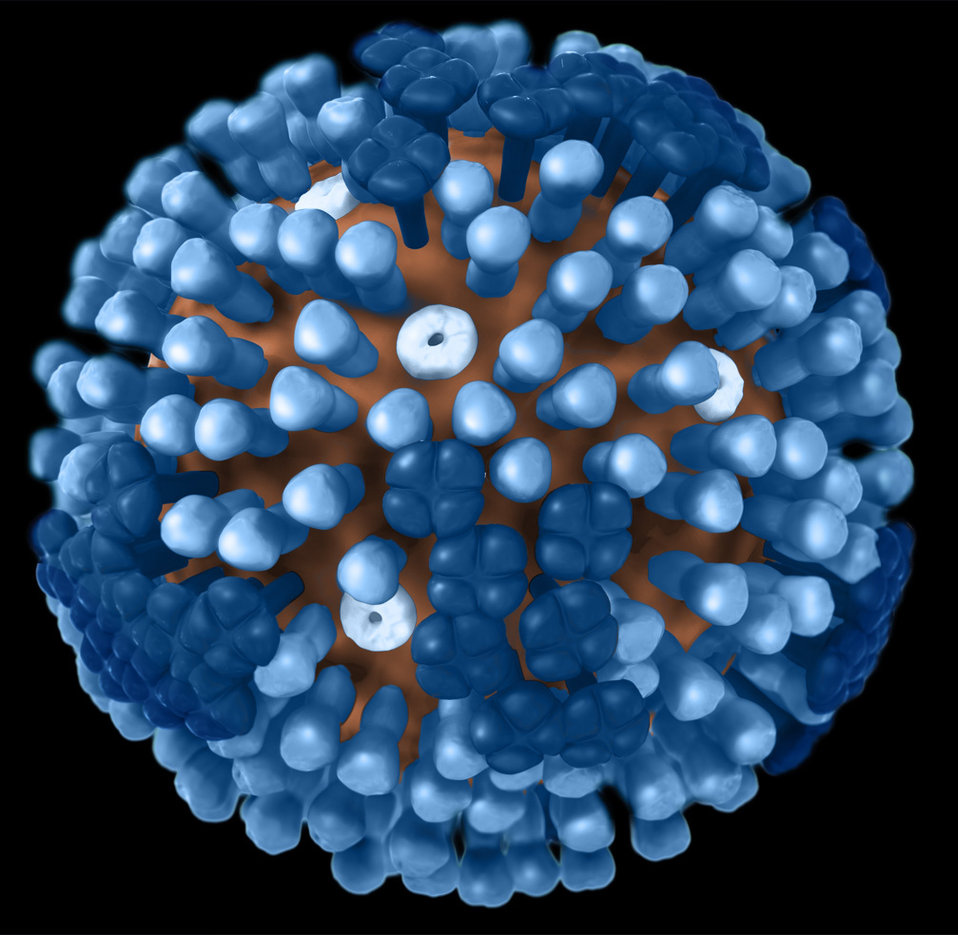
On a black background, this illustration provides a 3D graphical representation of a generic influenza virion's ultrastructure, and is not specific to a seasonal, avian or 2009 H1N1 virus. See PHIL 11875 for a cut-away view revealing the virion's interior, and PHIL 11876, which includes a key to the virion's protein constituents.